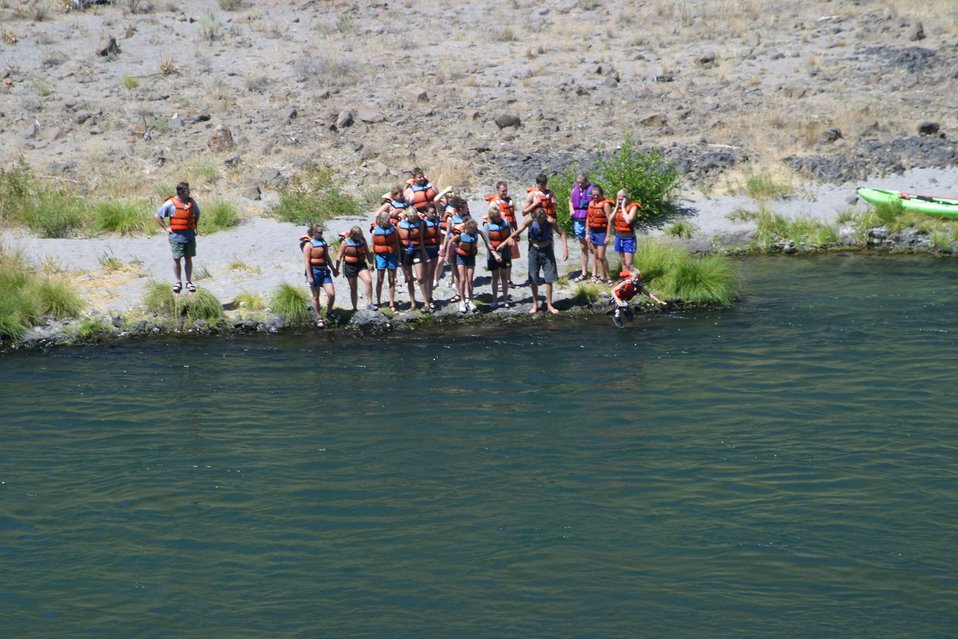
Elevator Rapids near Mile 46 on the Lower Deshcutes River. 7/26/03 Pelton Dam 3600 cfs: Moody Rapids 4300 cfs.